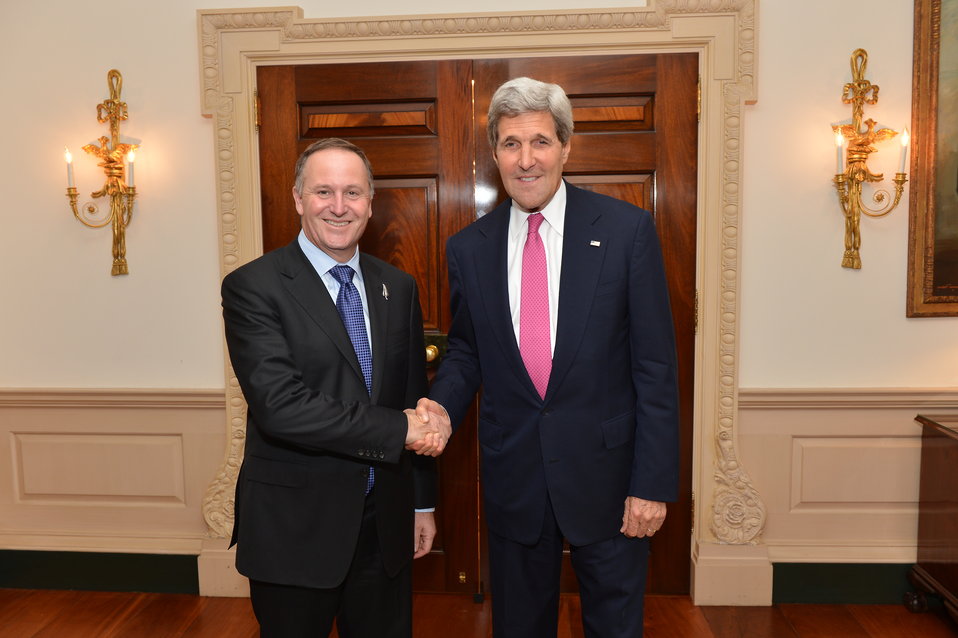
Secretary Kerry Meets With New Zealand Prime Minister Key

U.S. Secretary of State John Kerry meets with New Zealand Prime Minister John Key at the U.S. Department of State in Washington, DC on June 19, 2014.